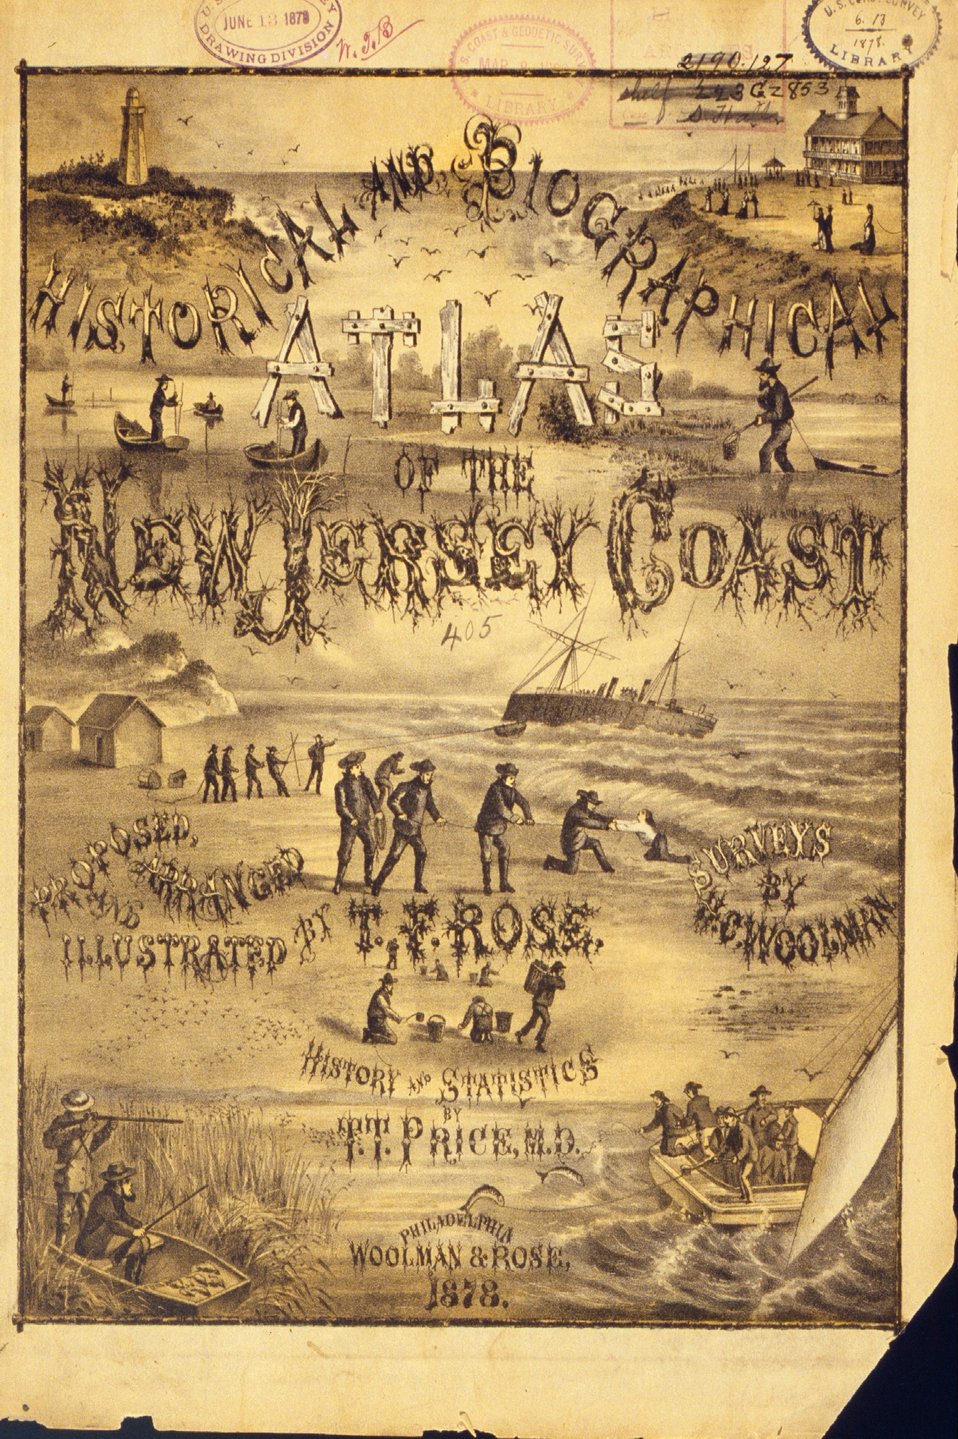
Cover of 'Historical and Biographical Atlas of the New Jersey Coast.'